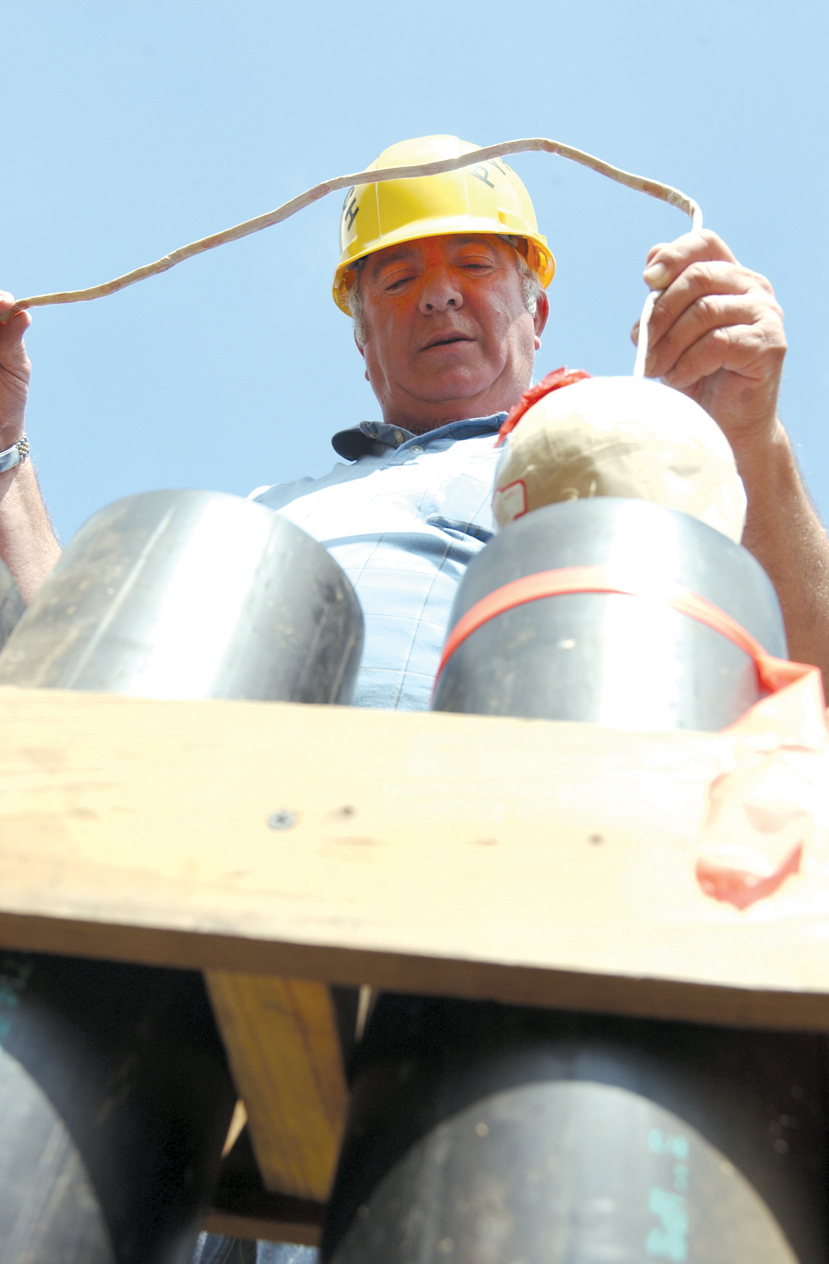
Civilian ensures Fourth of July celebration goes off with bang

SEYMOUR JOHNSON AIR FORCE BASE, N.C. -- Bob Howett checks to make sure a 5-inch firework shell fits in a launching tube. He has been putting on fireworks shows here since the 1980s. This year, his team will set off more than 300 shells plus another 300 during the finale. The Air Force retiree works for the 4th Civil Engineer Squadron's self-help store.